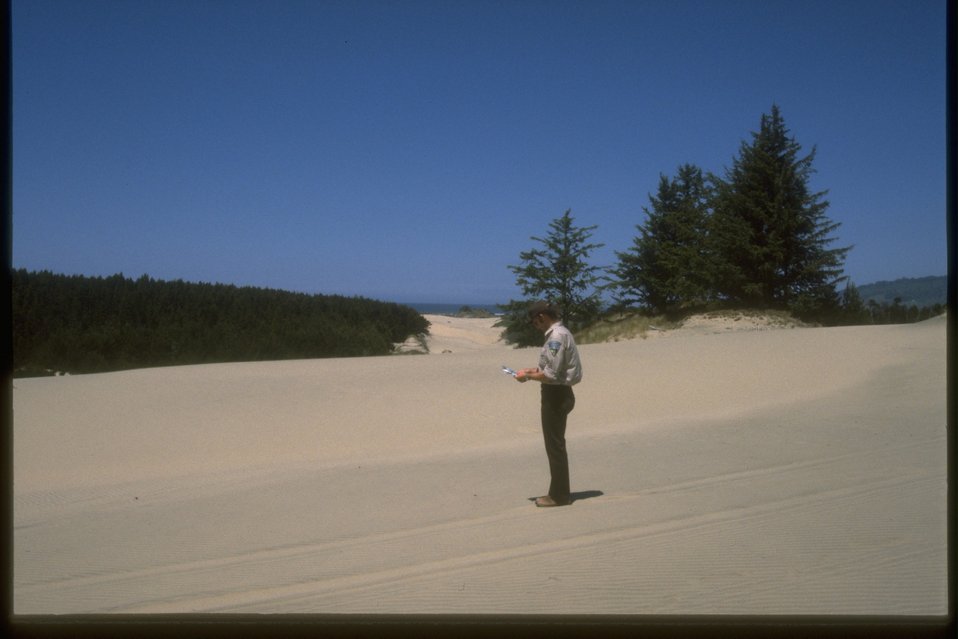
Inventory at Heceta Dunes.